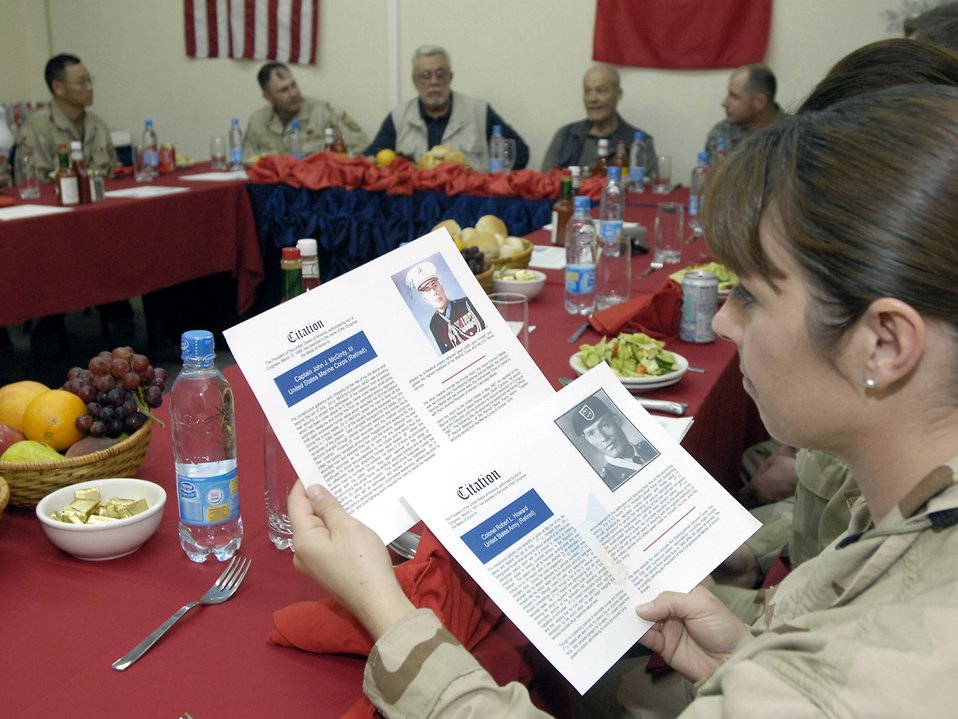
Medal of Honor recipients visit Manas Air Base

Medal of Honor Recipients, retired Army Col. Robert L. Howard and retired Marine Capt. John J. McGinty III, share their experiences with Top 3 Council members March 15 at Manas Air Base, Kyrgyzstan. Both recipients received their medals from actions taken during the Vietnam War.